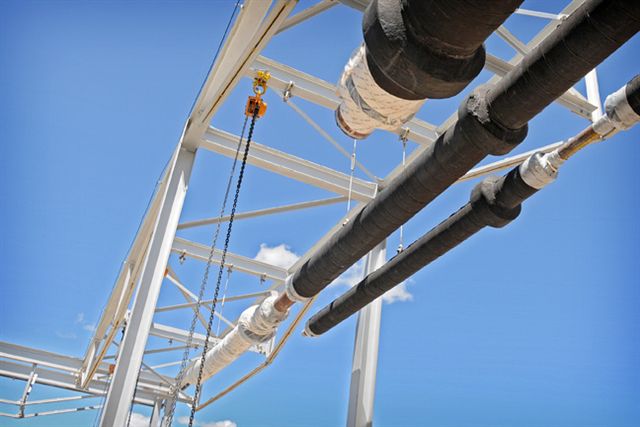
RAN DD MFC S117 MFC-766 STEAMPIPE 070610 P6556-008 A